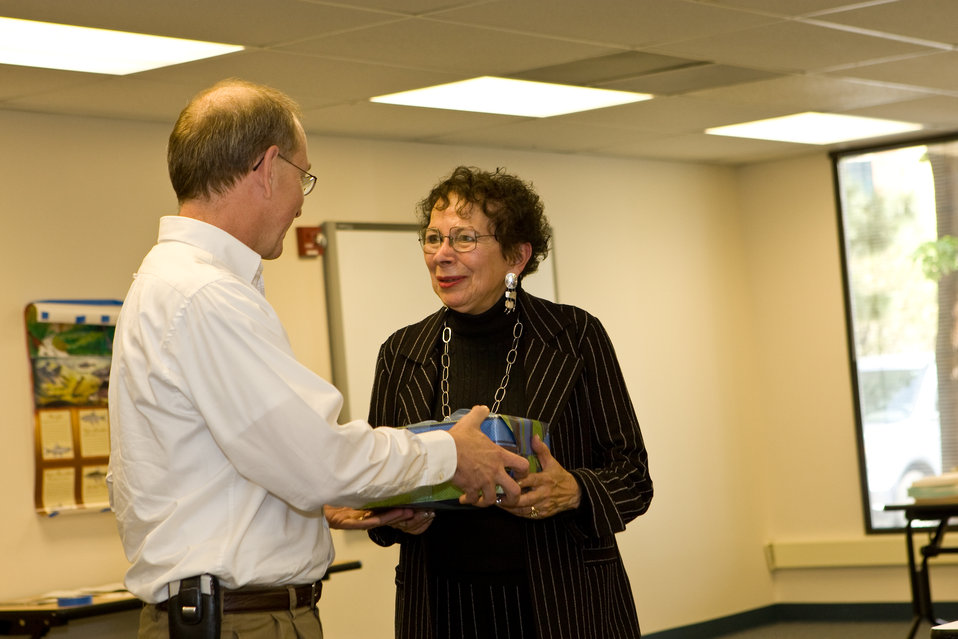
Assistant Director of Endangered Species Program, Gary Frazer, Presents Margot Zallen with an Award

On May 23rd, 2011 The U.S. Fish and Wildlife Service Mountain-Prairie Region honored three of the most influential individuals in wolf recovery in the Northern Rocky Mountains: Ed Bangs, Steve Fritts, and Margot Zallen. Ed Bangs started the event with an hour-long presentation, “Wolf Conservation: The Good, The Bad, and The Ugly.”

Following the presentation, Regional and National leadership recognized the imminent retirement of Ed, Steve, and Margot with a variety awards for their contributions.